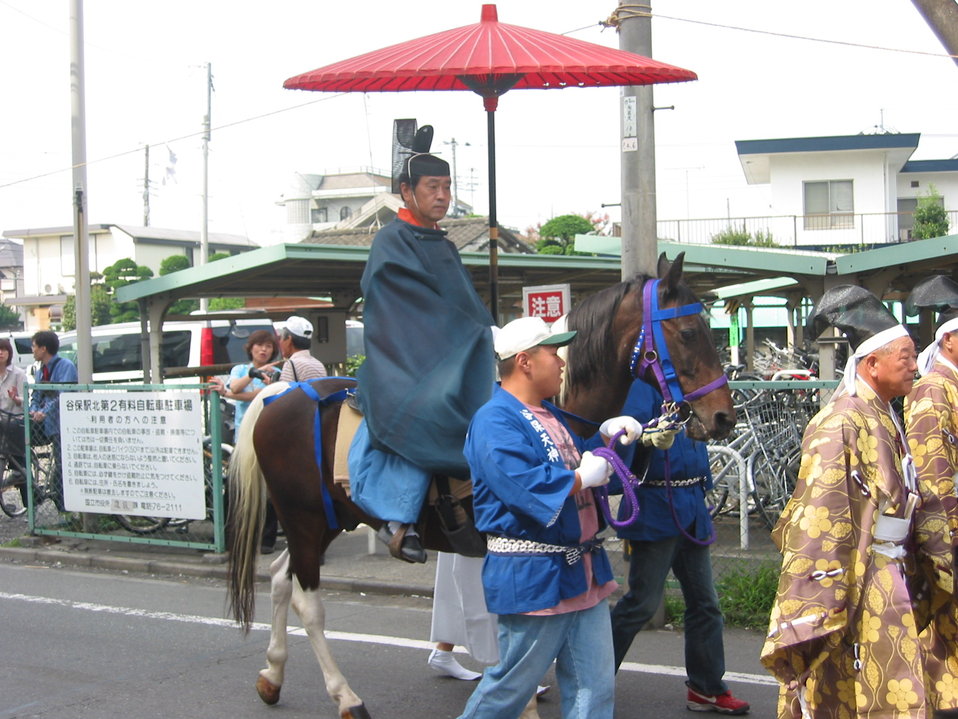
1100 anniversary festival of Yaho Tenmmangu